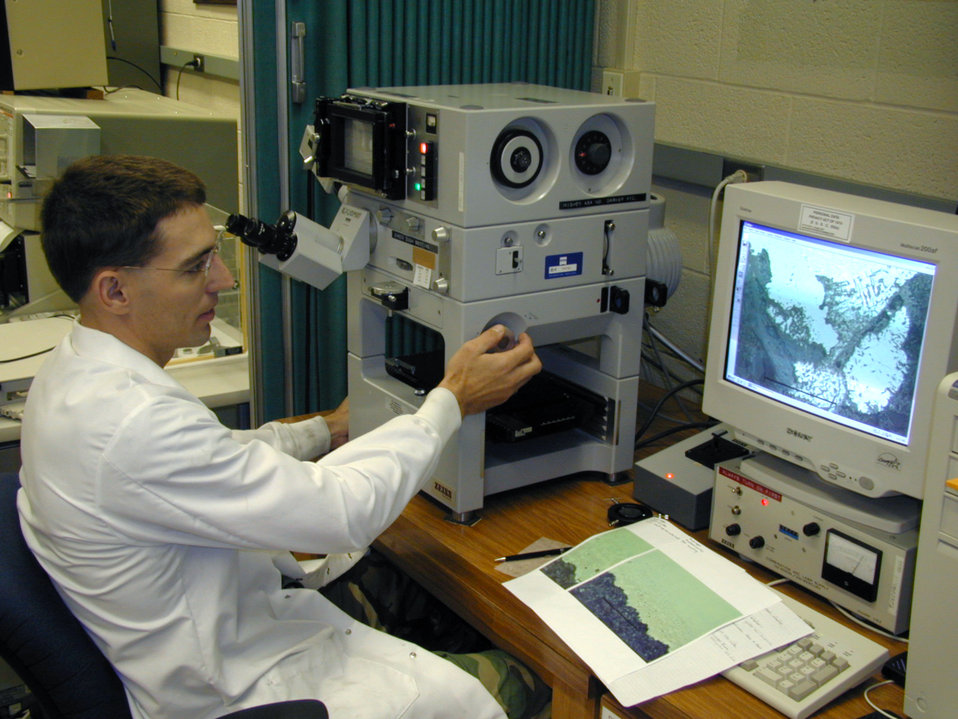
AFRL experts supporting C-5A evaluation program

WRIGHT-PATTERSON AIR FORCE BASE, Ohio -- Second Lt. Nathan Dozier investigates corrosion on an aircraft component using an optical microscope. Air Force Research Laboratory experts here will conduct investigations on C-5 Galaxy components using similar methods. Lieutenant Dozier is with the materials integrity branch at AFRL's materials and manufacturing directorate.